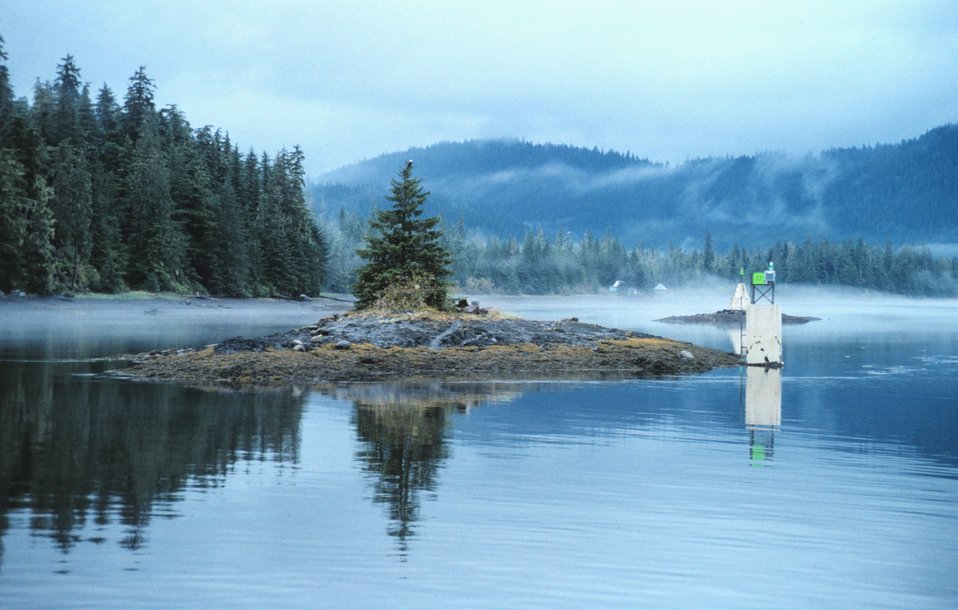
Wrangell Narrows - the most 'buoyed' passage in the world.